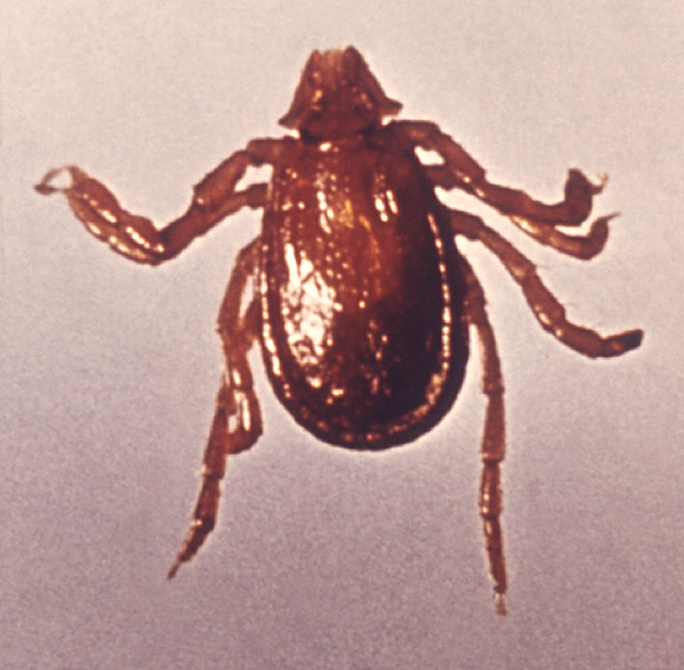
This is a member of the genus Haemaphysalis identified by the lateral protrusion of its 2nd palpal segment.